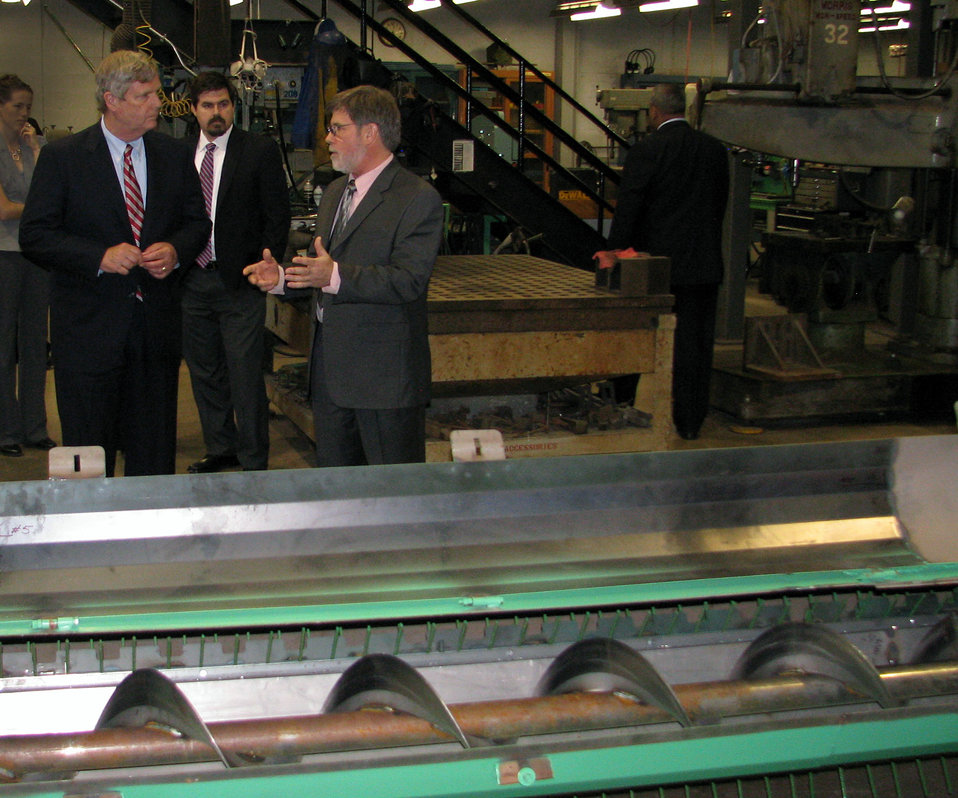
Agriculture Secretary Tom Vilsack listens to Dairy Forage Research Center Director Dr. Ronald Hatfield explain the Center’s specialized alfalfa chopper that separates the leaf of the alfalfa plant from the stem, at the U.S. Department of Agriculture’s (USDA) Dairy Forage Research Center, University of Wisconsin, Madison, WI, on Tuesday, May 7, 2013.